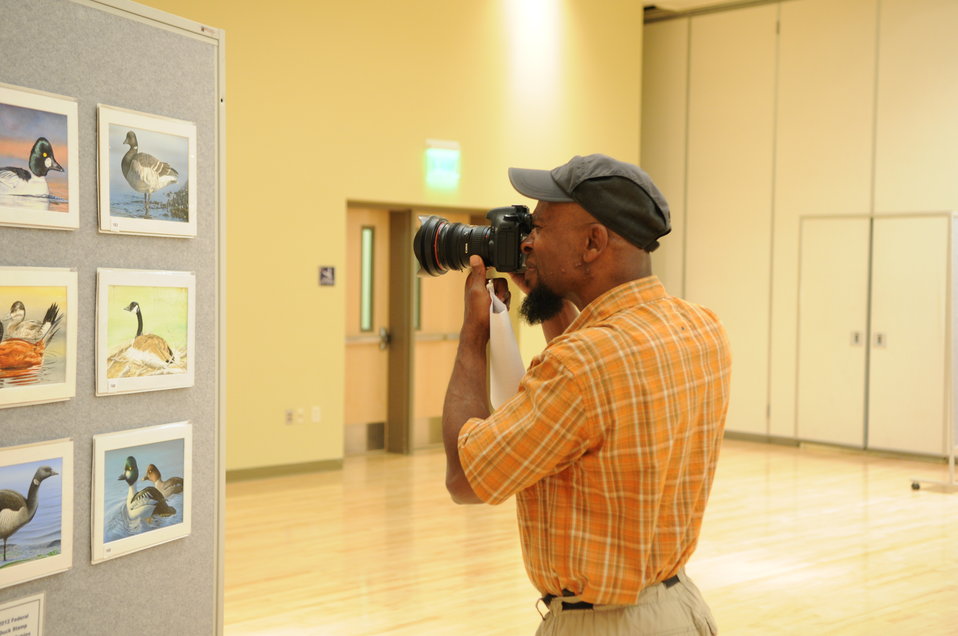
Judging

The U.S. Fish & Wildlife Service sponsored the 2012 Federal Duck Stamp Art Contest September 28 and 29 in Ogden, Utah, at Weber State University. A panel of five judges was responsible for choosing the art work used to design the 2013-2014 Migratory Bird Hunting and Conservation Stamp.